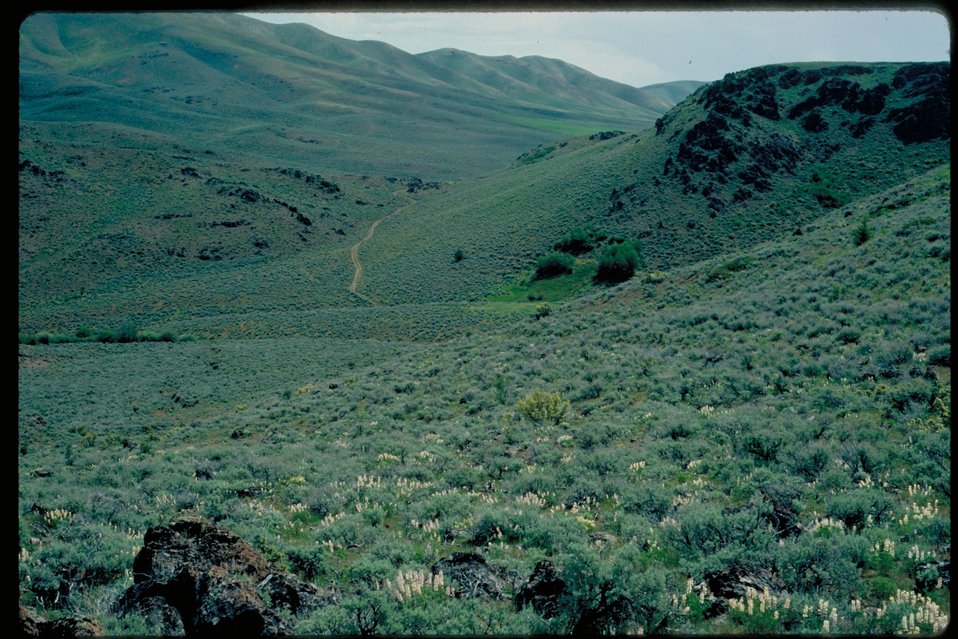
Goodales Cuttoff Cottonwood Spring Oregon Trail Lower Snake River District